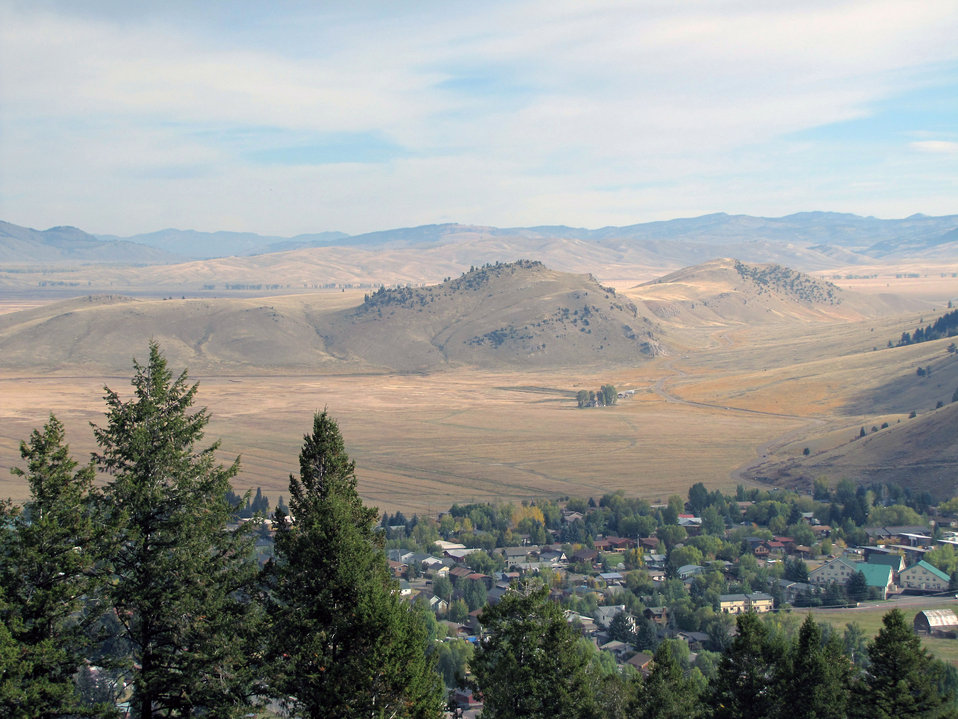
Looking Down From Snow King Ski Area

The boundary between the National Elk Refuge and the town of Jackson is very distinct in this view from the Snow King Ski Area.